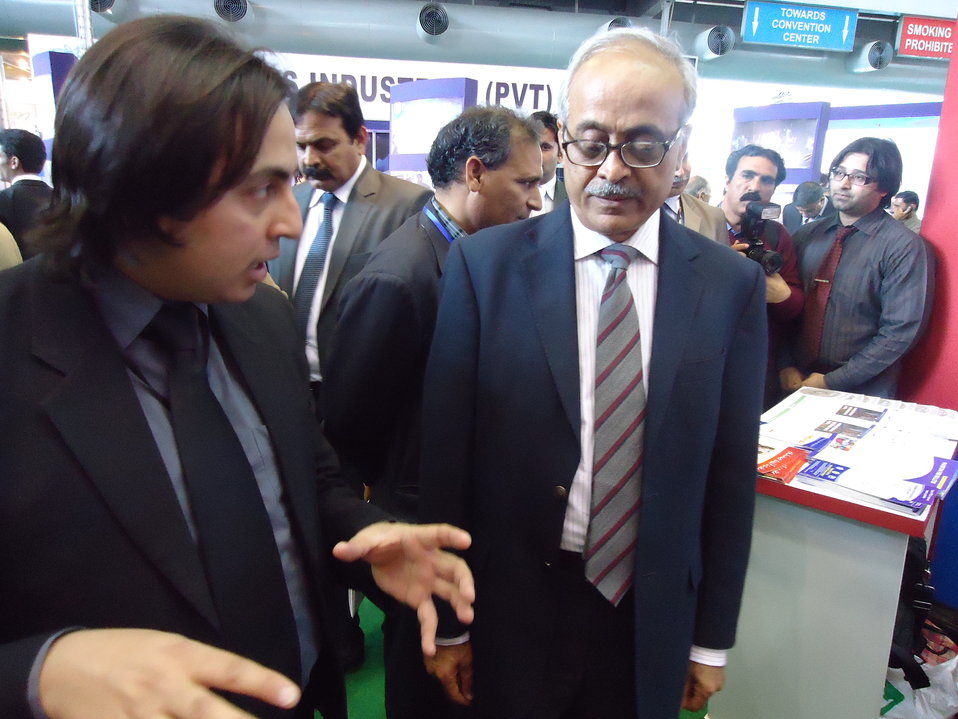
Sadpara Development Project

Vice Chancellor Uinversity of Agriculture Faisalabad (UAF) at SDP USAD Stall